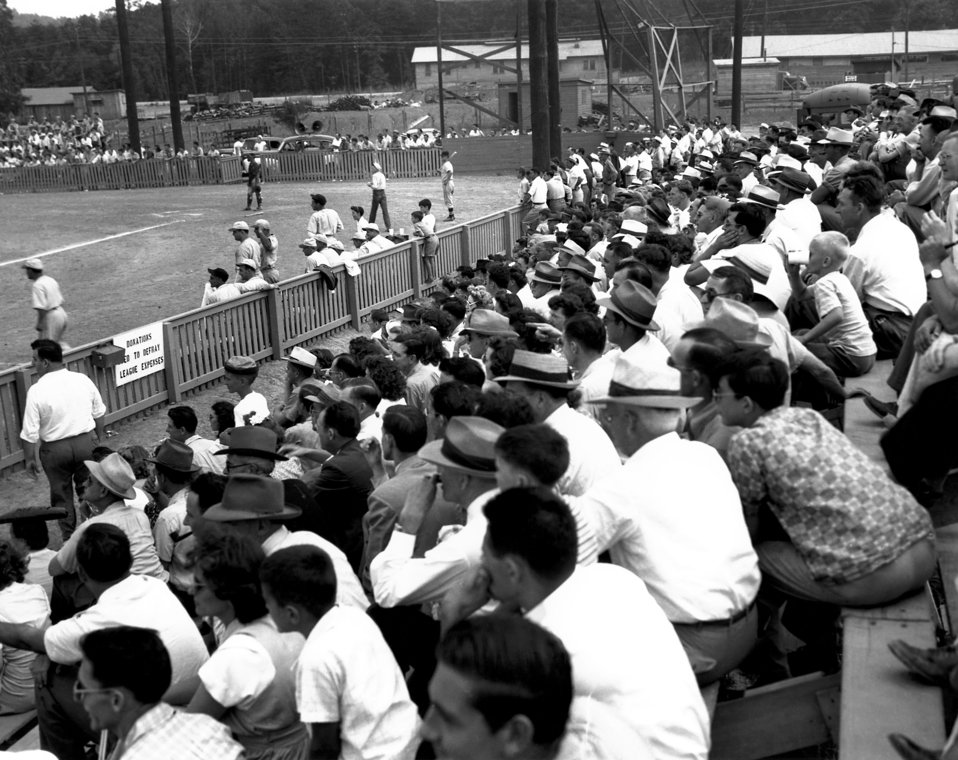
Baseball Game Oak Ridge 1945

Pro722 DOE photo Ed Westcott 6-17-1945 Army Cards vs Moore General Hospital Oakwood Park Oak Ridge Tennessee